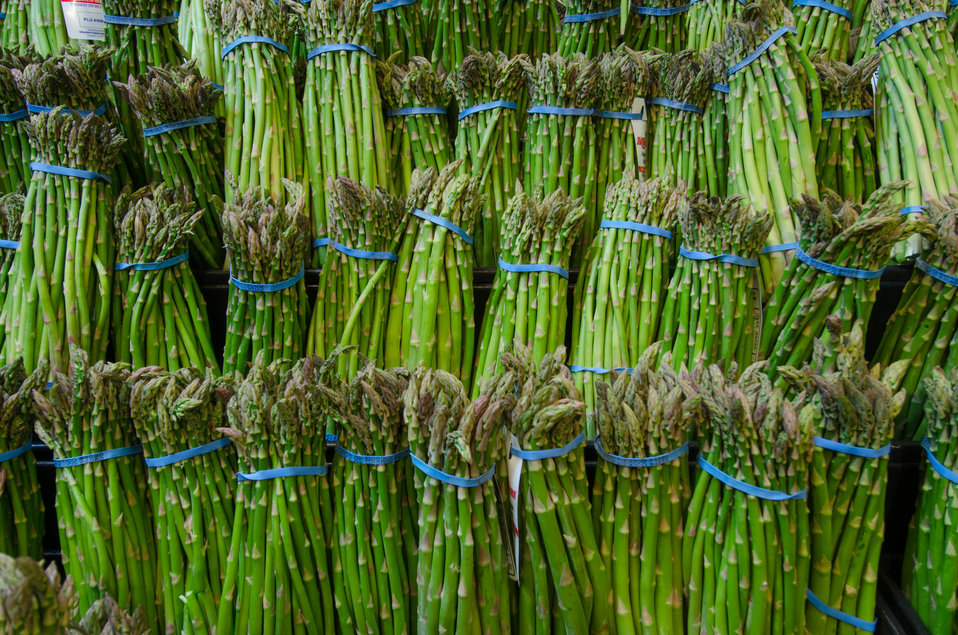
Asparagus at a grocery store in Fairfax, Virginia, on March 3, 2011.